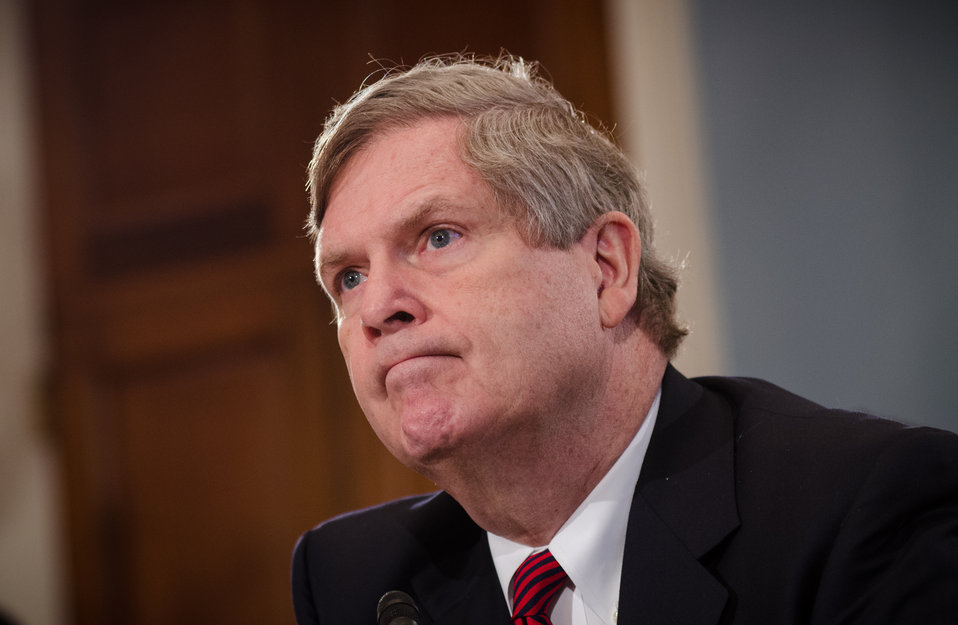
Agriculture Secretary Tom Vilsack testifies before the House Agriculture Committee regarding the “State of the Rural Economy“ at the Longworth House Office Building in Washington, D.C. on Tuesday, Mar. 5, 2013.